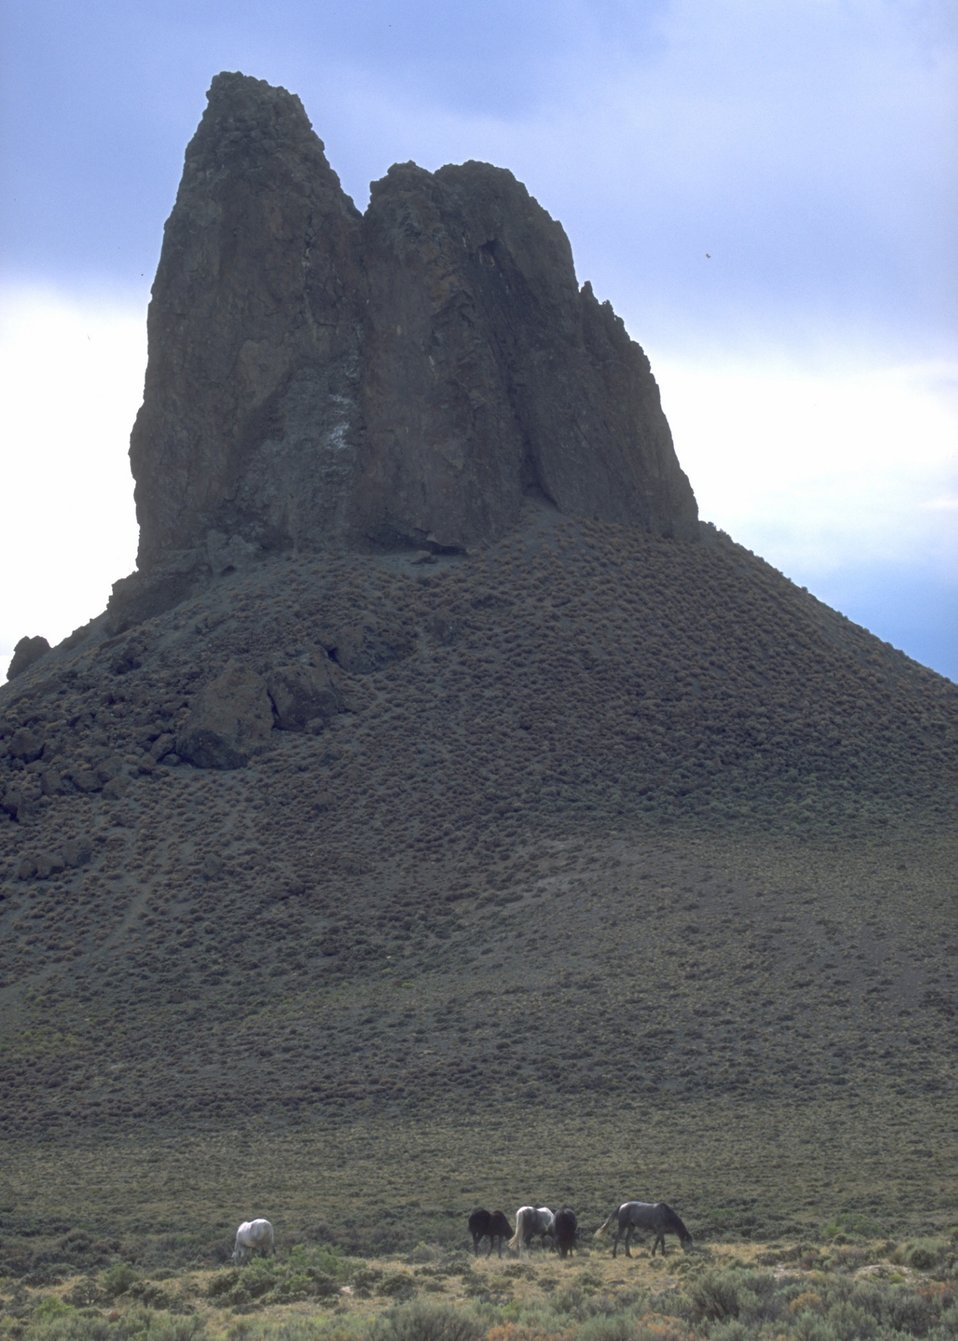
Wild Horses and Boar's Tusk, Rock Springs Field Office.